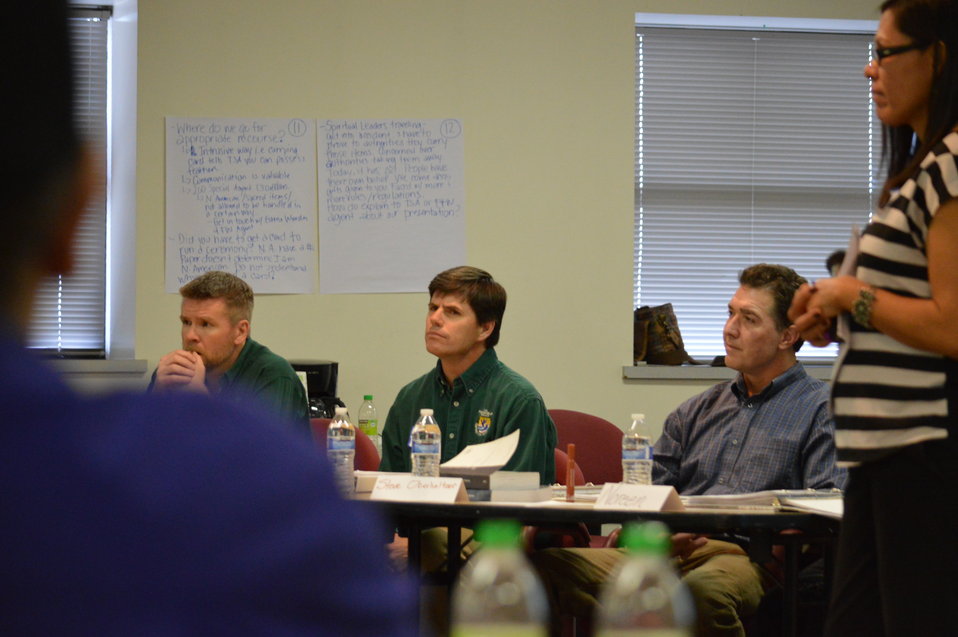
Eagle Summit III - Consultation

Consultation begins at the Eagle Summit III in Denver, Colorado on March 20, 2014 at the Rocky Mountain Arsenal National Wildlife Refuge.